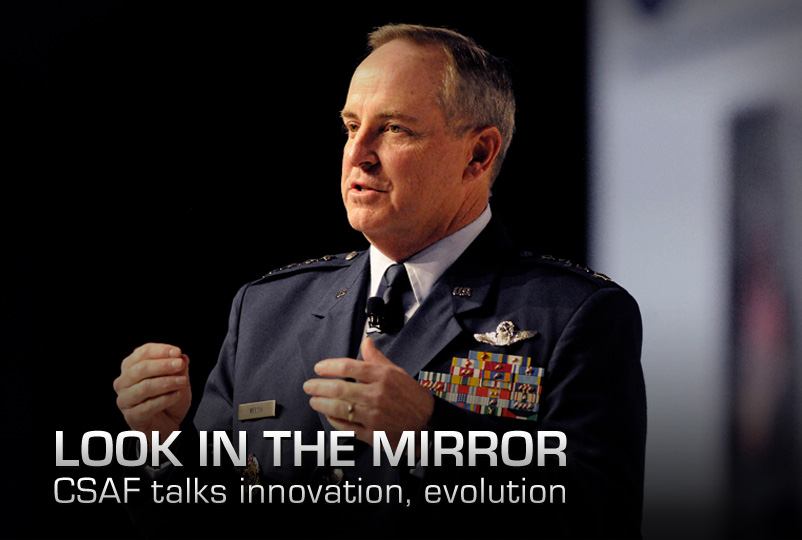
Look in the mirror

Air Force Chief of Staff Gen. Mark A. Welsh III presents the